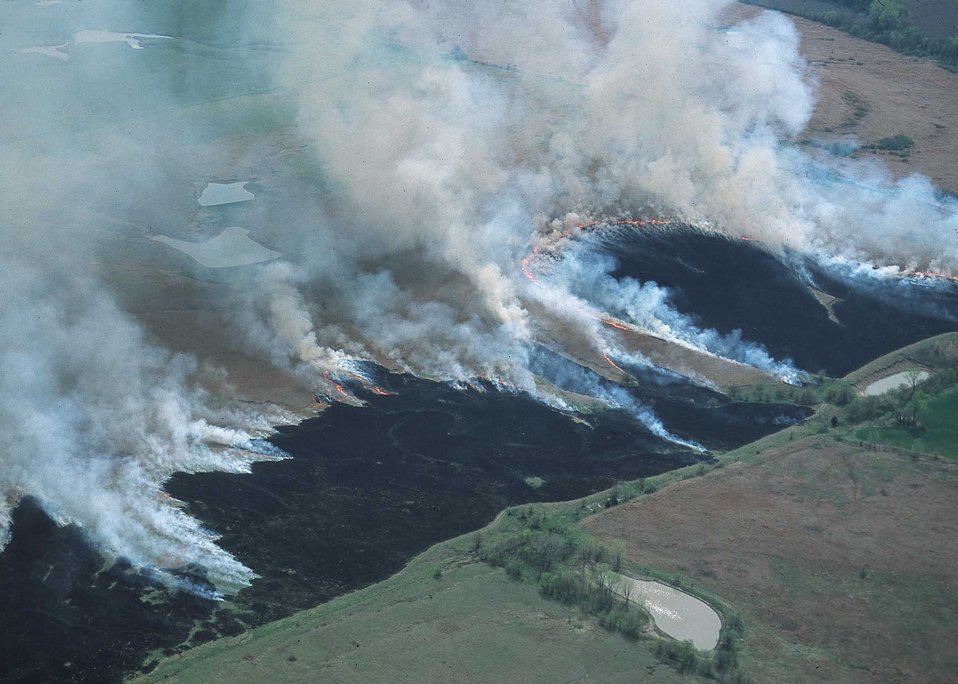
Aerial view of prairie burn to stimulate grass growth and production. Manhattan, Kansas.